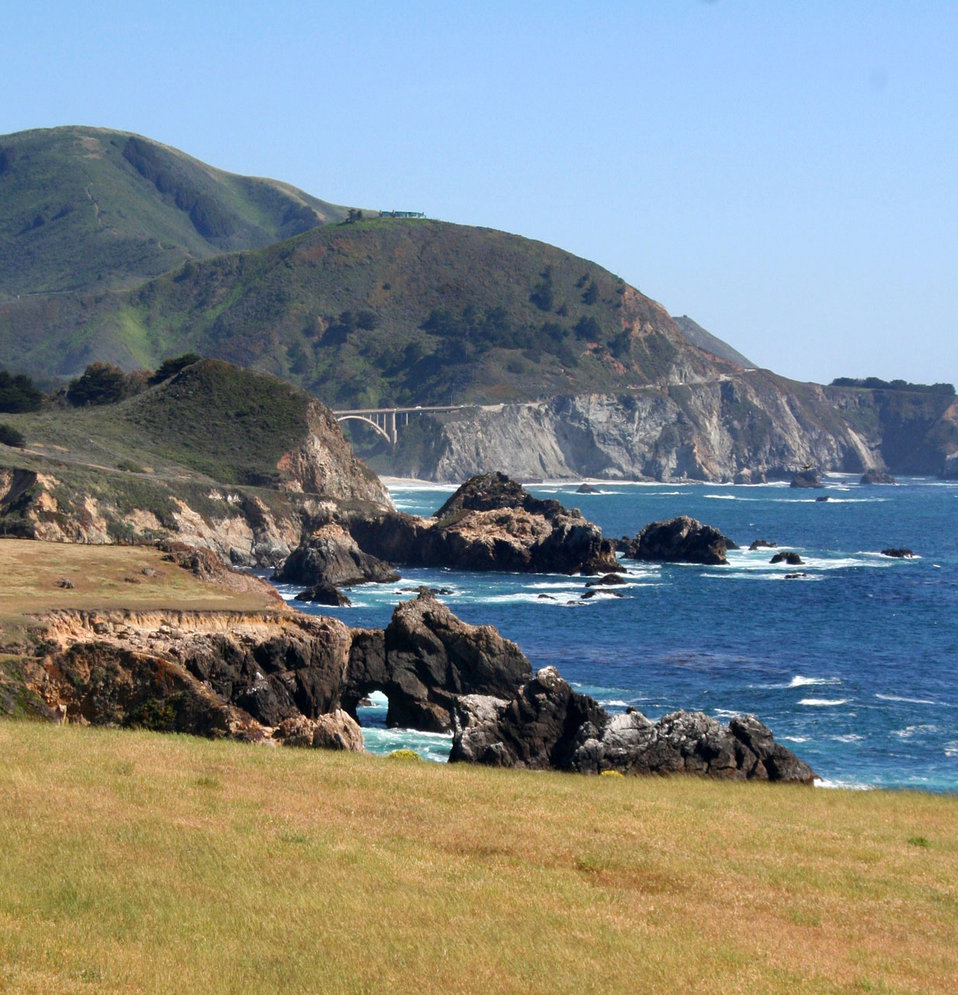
Big sur north coast

Pacific coastline in big sur.